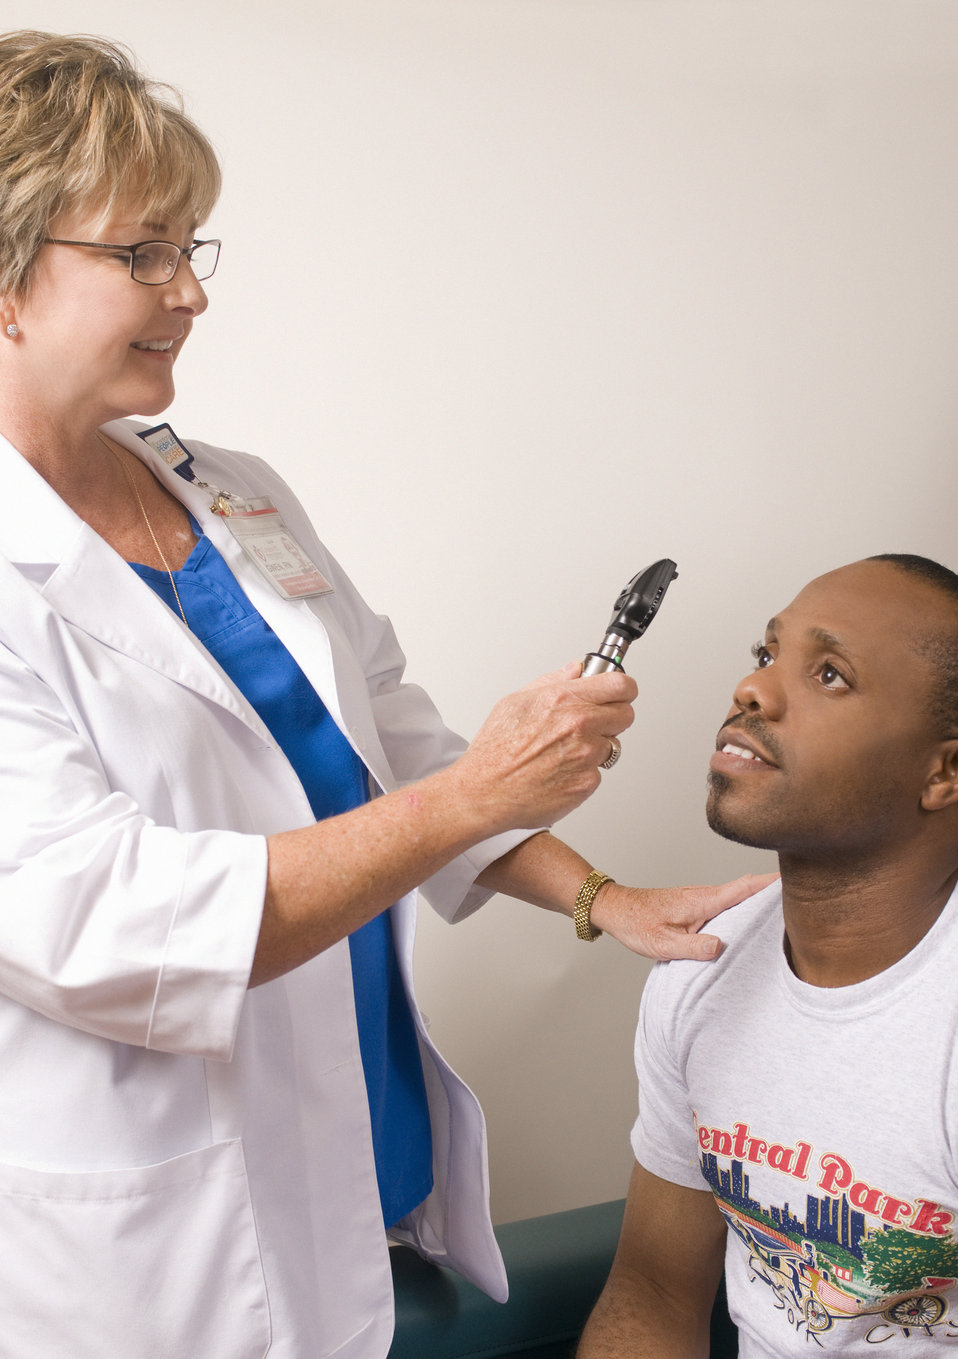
This seated male patient was in the process of receiving an eye examination from a female clinician, who was using a hand-held ophthalmoscope to see into his right eye.